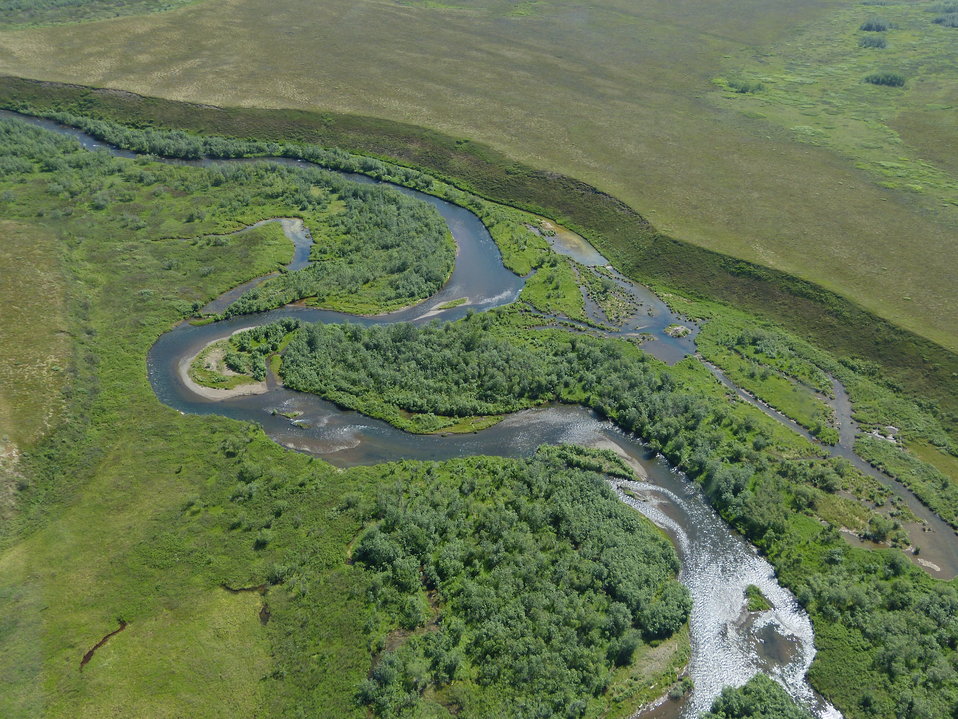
Crooked Creek, Kilbuck Mountains, Yukon Delta National Wildlife Refuge

Photo by: Kristine Sowl,
USFWS, Yukon Delta NWR, July 10, 2013